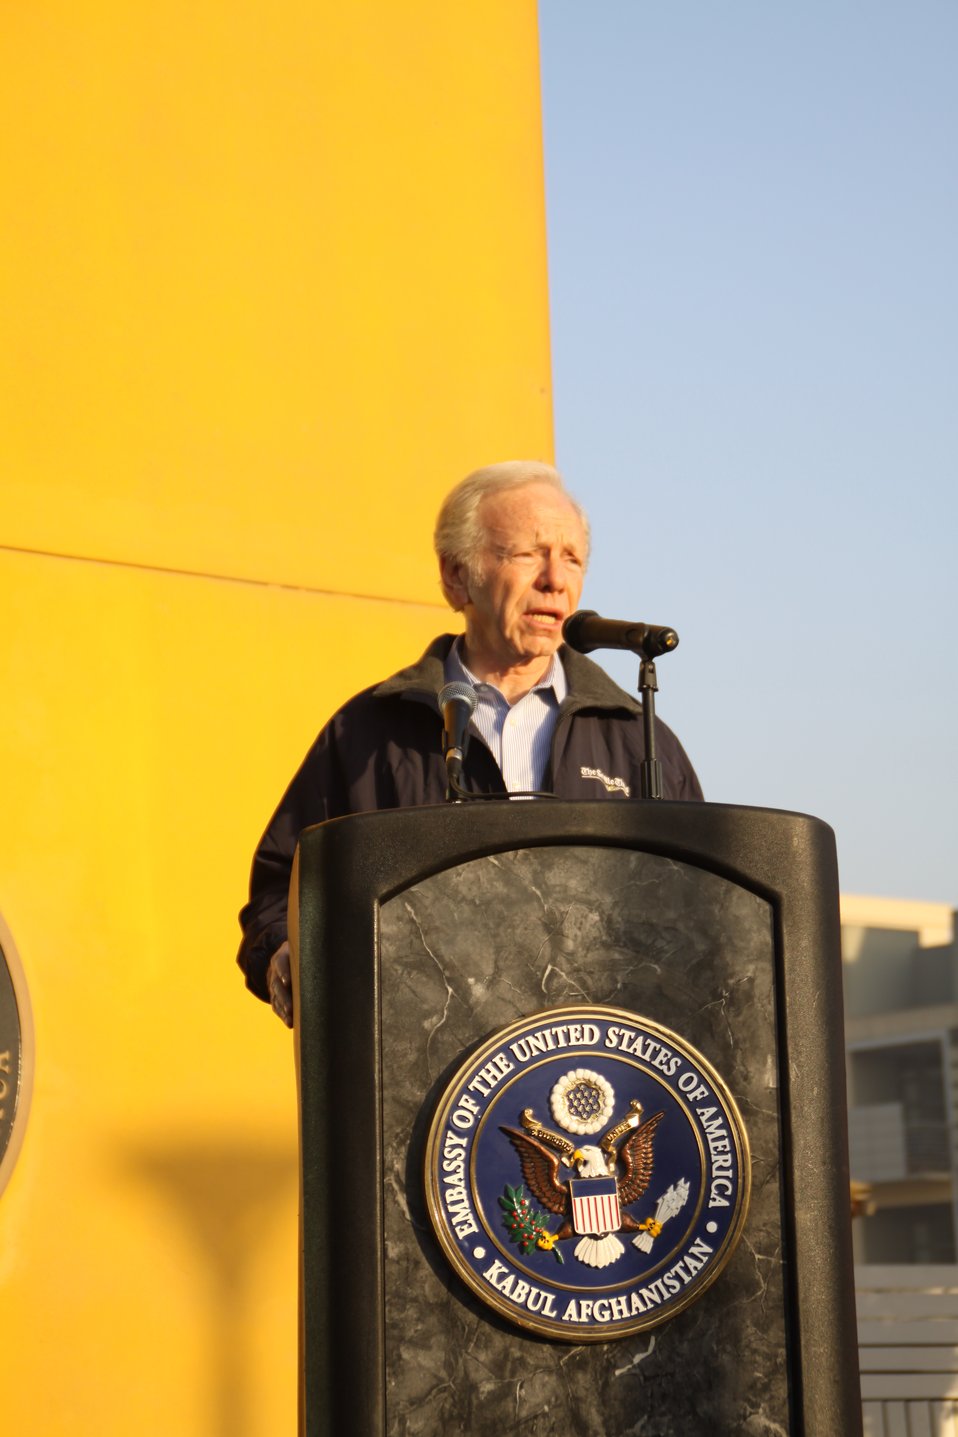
Senator Lieberman